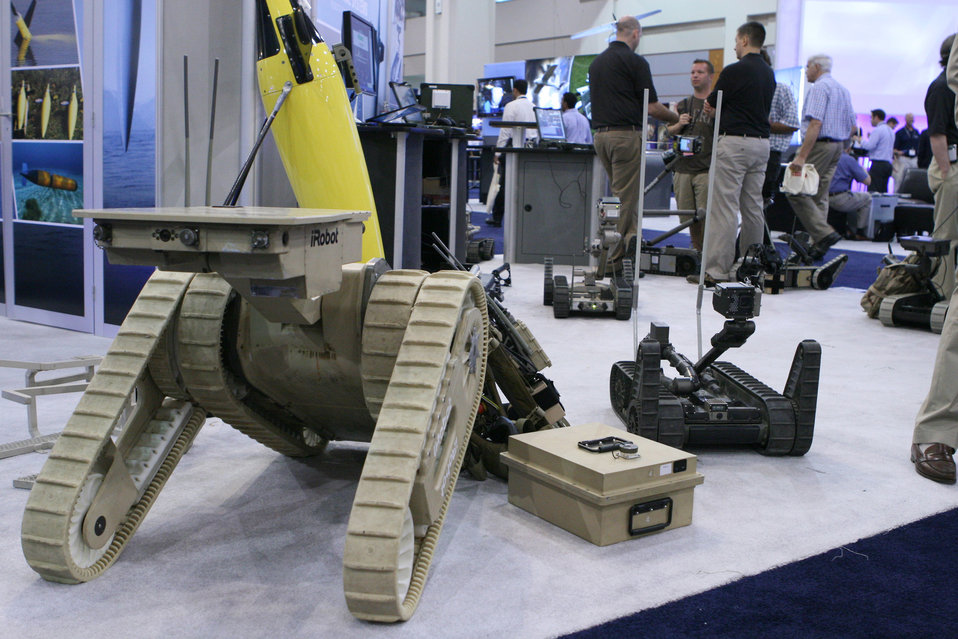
Convention showcases unmanned capabilities

Unmanned robotic surveillance and bomb detection systems are displayed during the Association for Unmanned Vehicle Systems International Unmanned Systems North America 2009 Convention Aug. 11 at the Washington, D.C., Convention Center. More than 5,000 people attended the four day conference and exhibit to see the more than 320 unmanned aerial, maritime and ground systems on display.